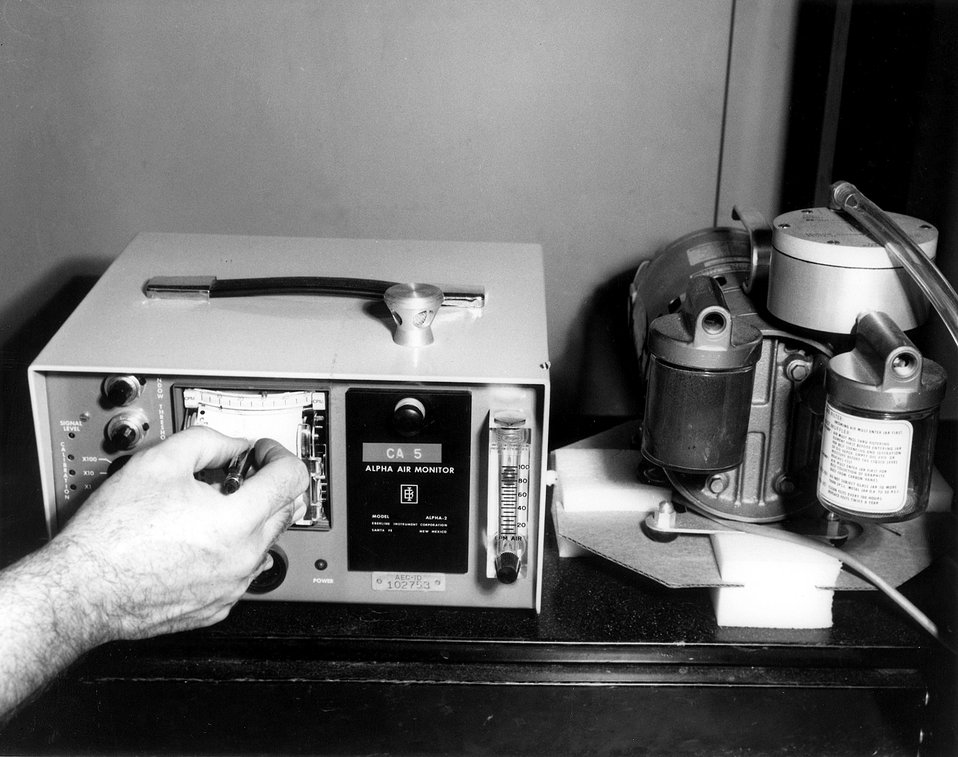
Typical alpha air monitor at the Atomic Energy Commission's National Reactor Testing Station in Idaho. Circa 1974.